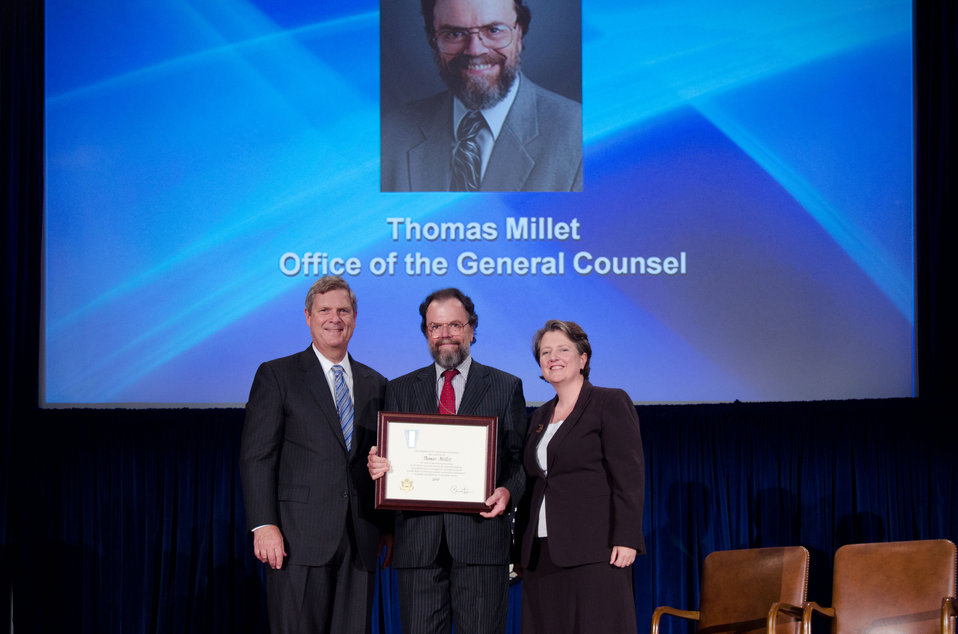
Agriculture Secretary Tom Vilsack (l) and Deputy Secretary Kathleen Merrigan (r), presents the Award to Thomas Millet, Associate General Counsel, Natural resources an environment, Office of the general counsel. The President of the United States of America has conferred on Thomas Millet the rank of Meritorious Executive in the Senior Executive Service for sustained superior accomplishment in management of programs of the United States Government and for noteworthy achievement of quality and efficiency in the public service. On Wednesday, September 14, 2011 in the Jefferson Auditorium at the US Department of Agriculture in Washington, DC.